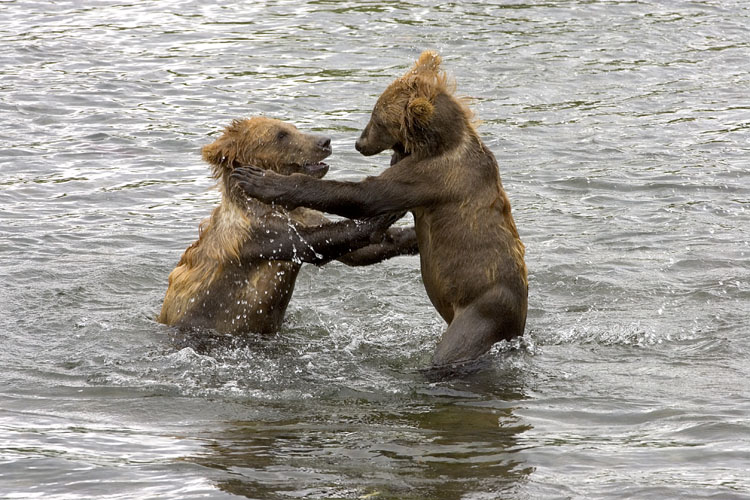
KOD Hildebrand (19)

Kodiak National Wildlife Refuge- Wildlife